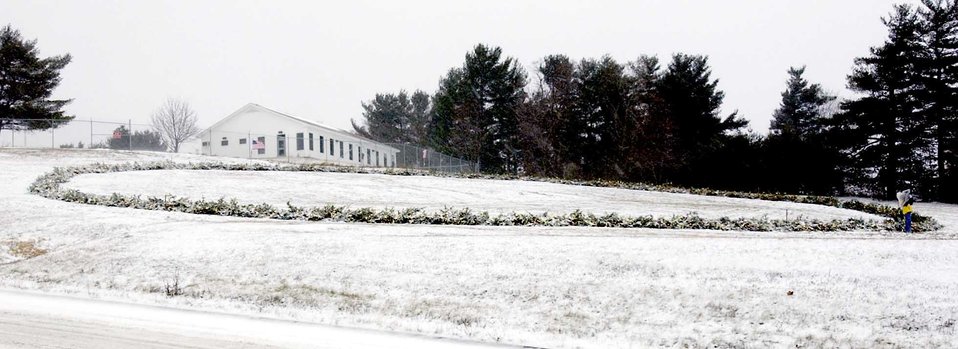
Huge wreath honors all servicemembers

AUGUSTA, Maine -- A Christmas wreath that is 150 feet across and 496 feet around sits outside the Maine National Guard headquarters here, in tribute to servicemembers engaged in the war against terrorism.